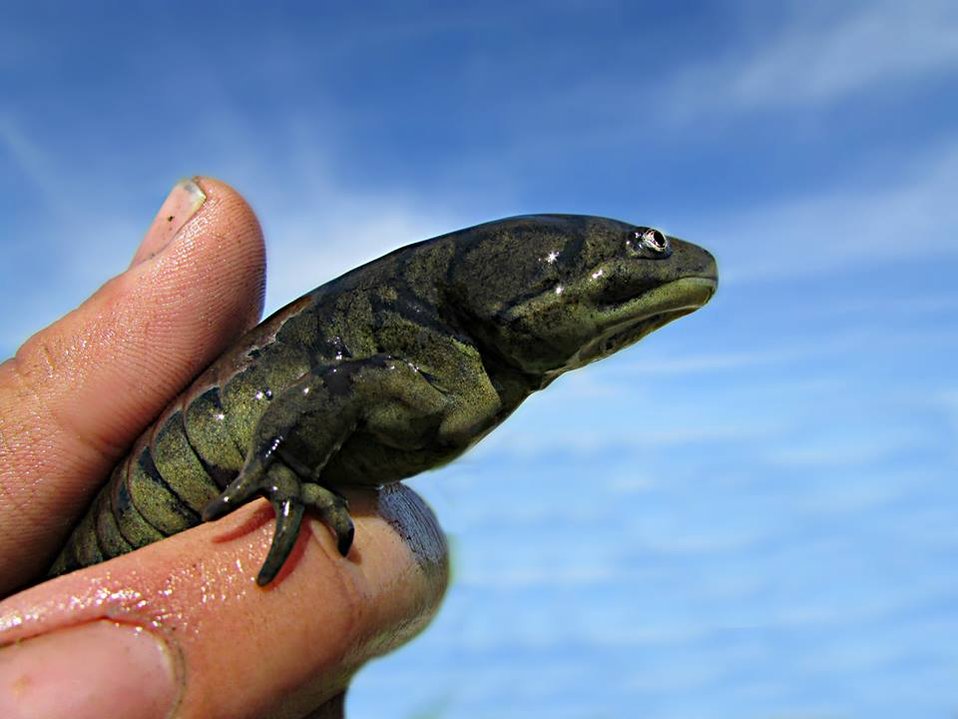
Tiger Salamander

Sometimes the most fascinating critters at the hatchery aren't even fish.

Yesterday during walleye harvest we saw four adult tiger salamanders. Tiger salamanders are rarely seen, as they spend most of their time underground or underwater. Assistant Project Leader, Craig Bockholt, noted these were the first ones that he has seen in years at the hatchery.

Tiger salamanders sport an olive and black camouflage and live off of insects and worms. This guy can now be seen by the public and is apart of our softshell turtle tank at the aquarium!